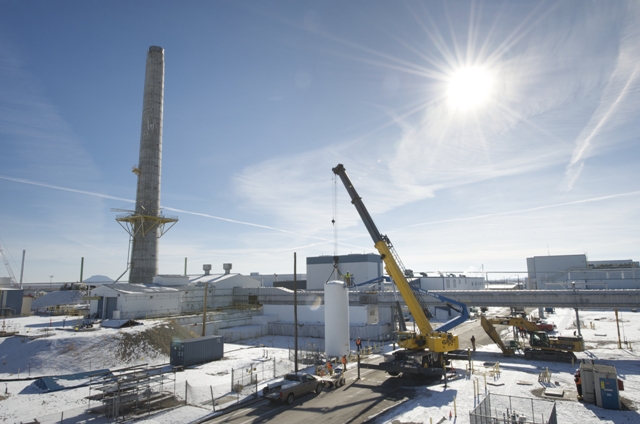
ARRA-funded Accelerated Retrieval Project III completed at the DOE Idaho Site

Workers at the Idaho Cleanup Project (ICP) accomplished another major environmental cleanup deliverable as they safely retrieved and packaged 539 cubic meters of targeted waste to complete the Accelerated Retrieval Project (ARP) III, over a year ahead of schedule.